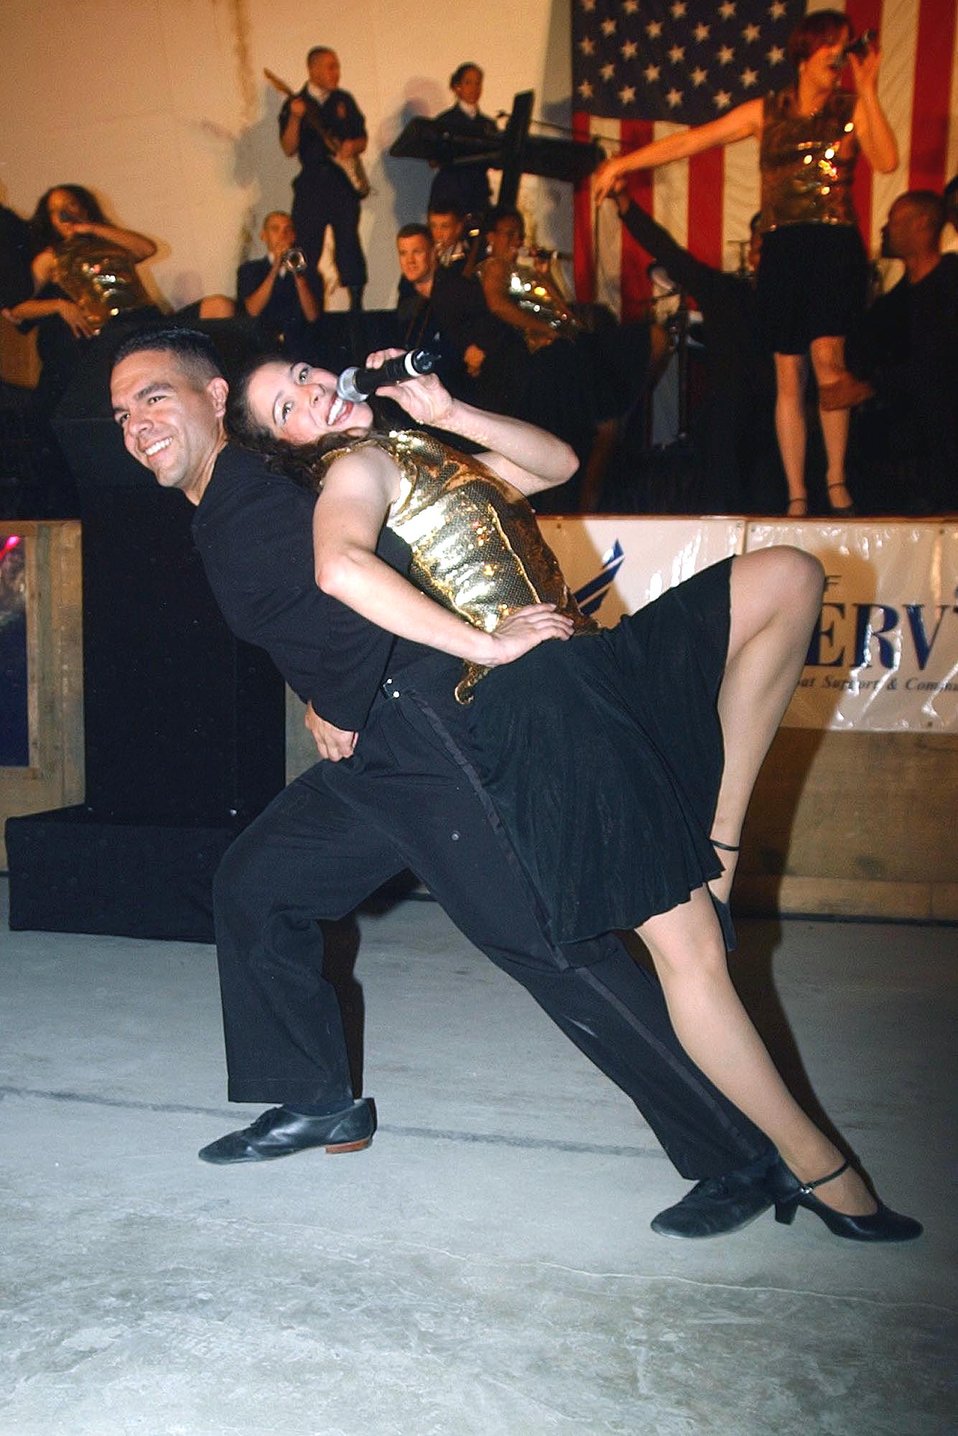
Entertaining the troops

BAGRAM AIR BASE, Afghanistan -- Airman 1st Class Brian Pop (left) and Senior Airman Jamie Coffey, Tops in Blue vocalists, perform a song and dance during their performance here Oct. 11. Coffey is from the 375th Security Forces Squadron at Scott Air Force Base, Ill. Pop is from the 49th Aircraft Maintenance Squadron at Holloman AFB, N.M.